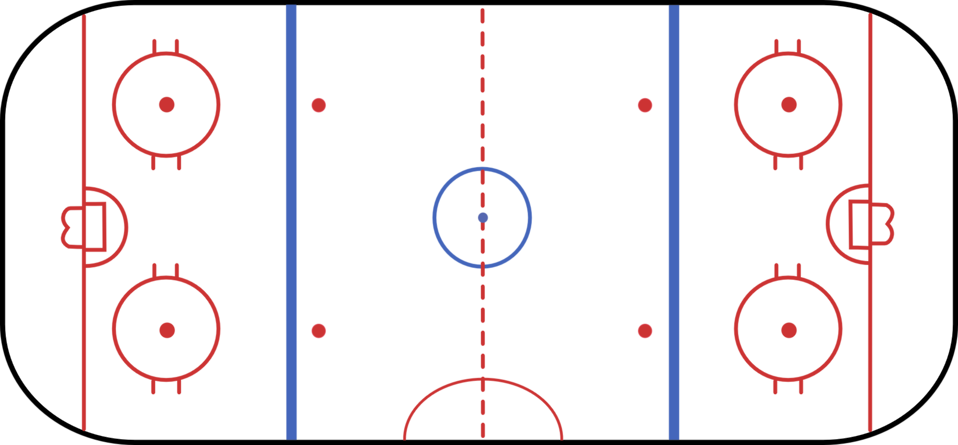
Layout of a hockey rink.